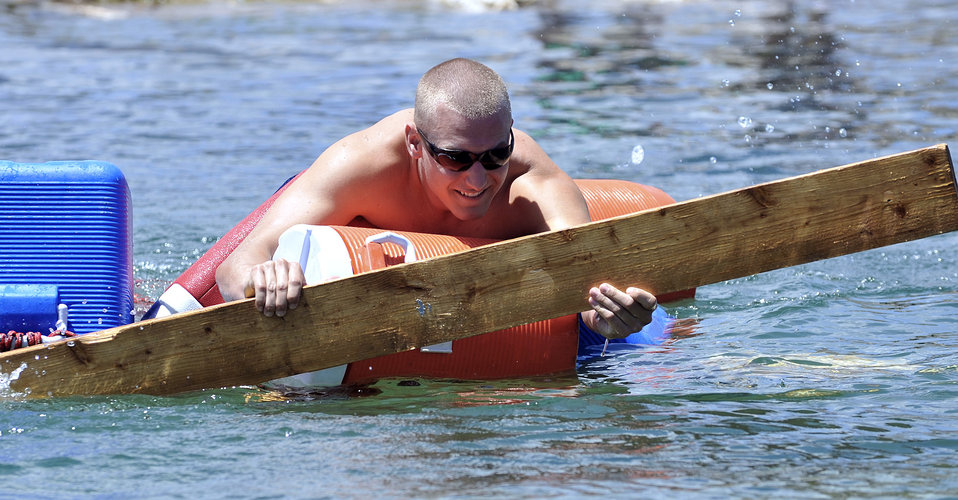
Engineering camp attracts, inspires students

Alex Pressier attempts to steer C Flight's raft after it fell apart in the water June 25, 2011, during a Society of American Military Engineers camp at the Air Force Academy.